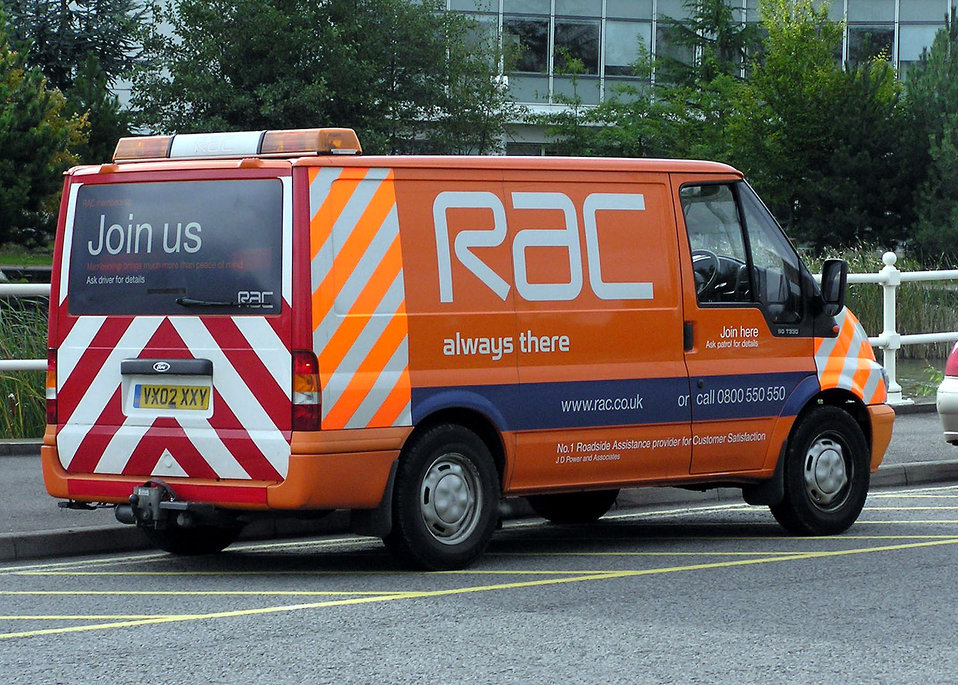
Rac.van.arp